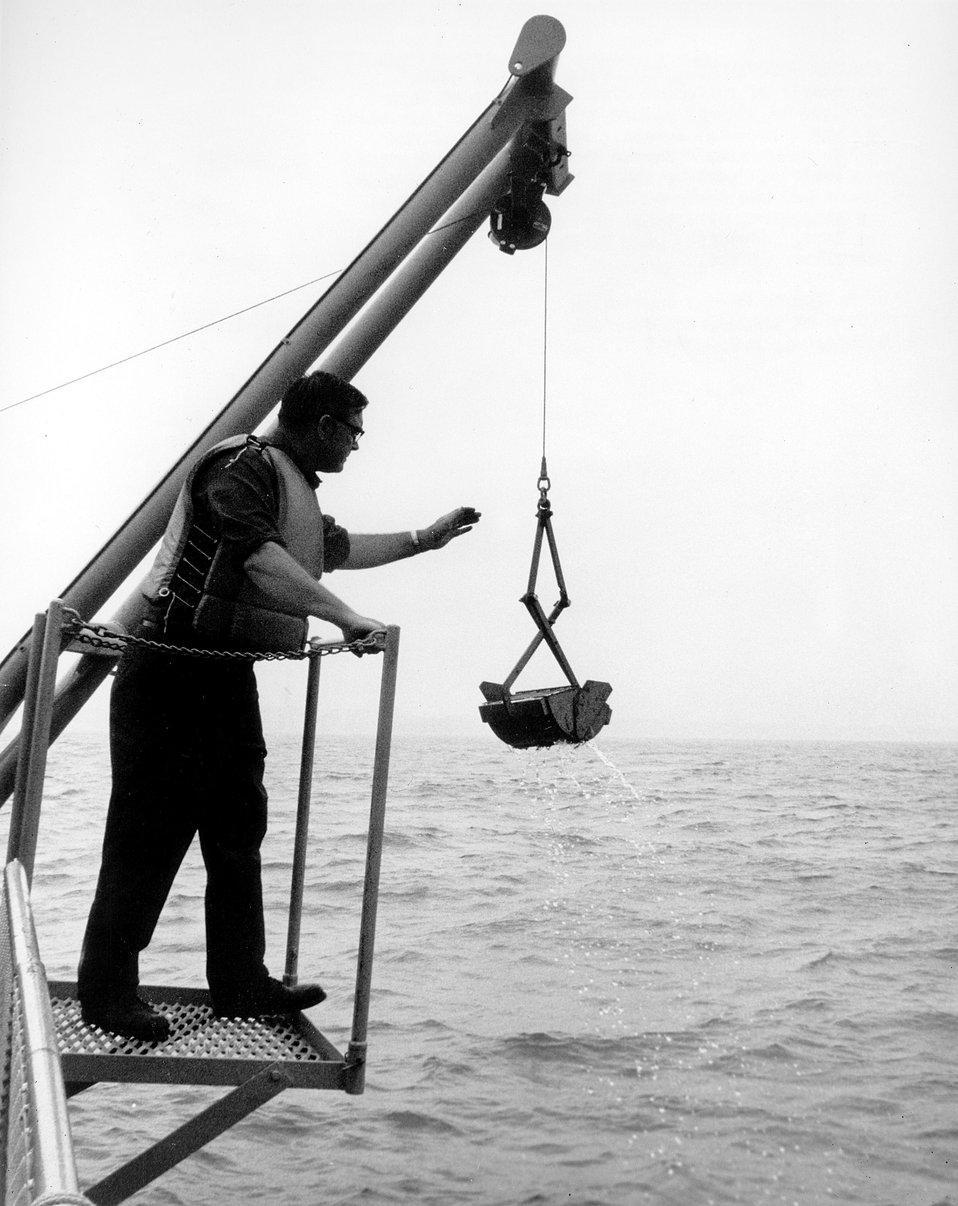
Samples of sediments from the bottom of Lake Michigan is brought aboard a U of Wisconsin research vessel.
c.1972